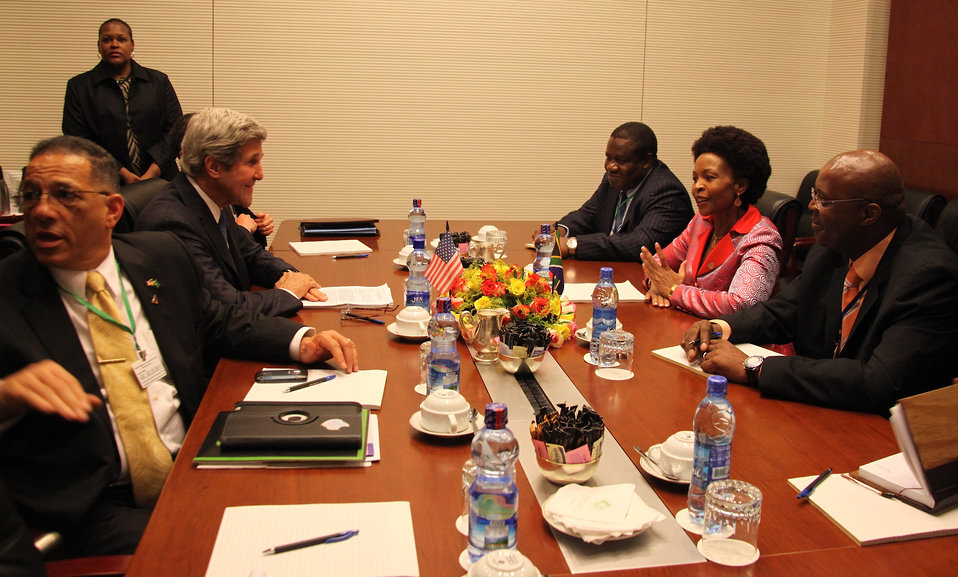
Secretary Kerry Meets With South African Foreign Minister Nkoana-Mashabane

U.S. Secretary of State John Kerry meets with South African Foreign Minister Maite Nkoana-Mashabane during a break at the 50th anniversary African Union Summit in Addis Ababa, Ethiopia, on May 25, 2013.